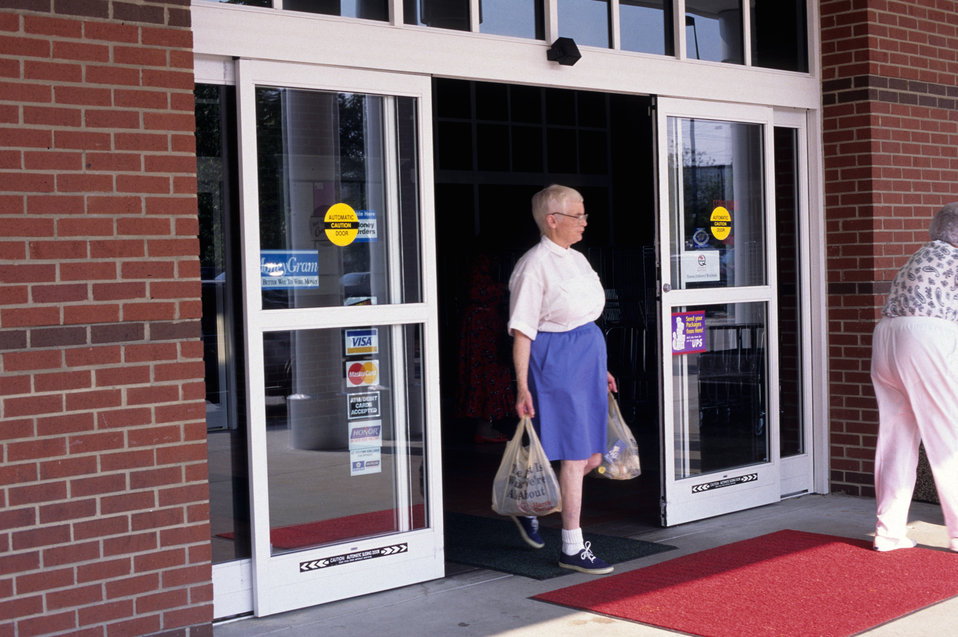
With her hands full, this 1996 image depicted a woman departing a grocery store carrying multiple grocery bags, as well as her personal belongings. Had there have been a door handle with which she'd have to contend, her exit would have been hampered, and made much more complicated. Widely used, 'no-touch' automatic doors accommodate all types of users, including the mobility-challenged, as well as those whose hands are filled with purchases. Simple, and in common use, the wide automatic door is an excellent example of Universal Design. Other facilities should, where possible, consider this option.